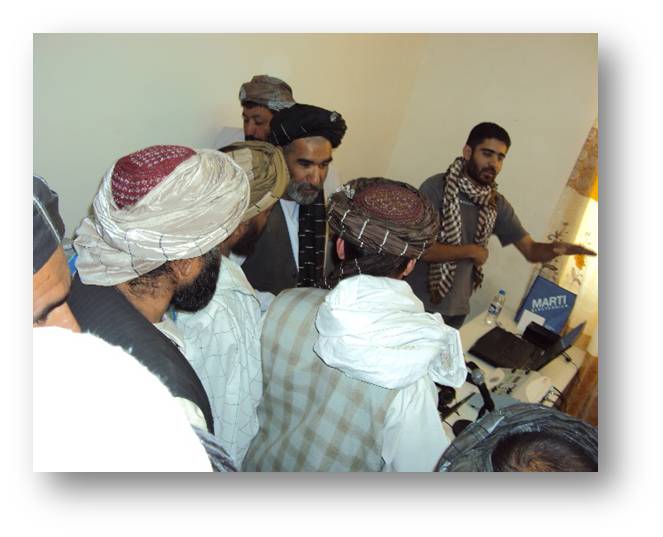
Arghandab Radio: Tuning in to Good Governance